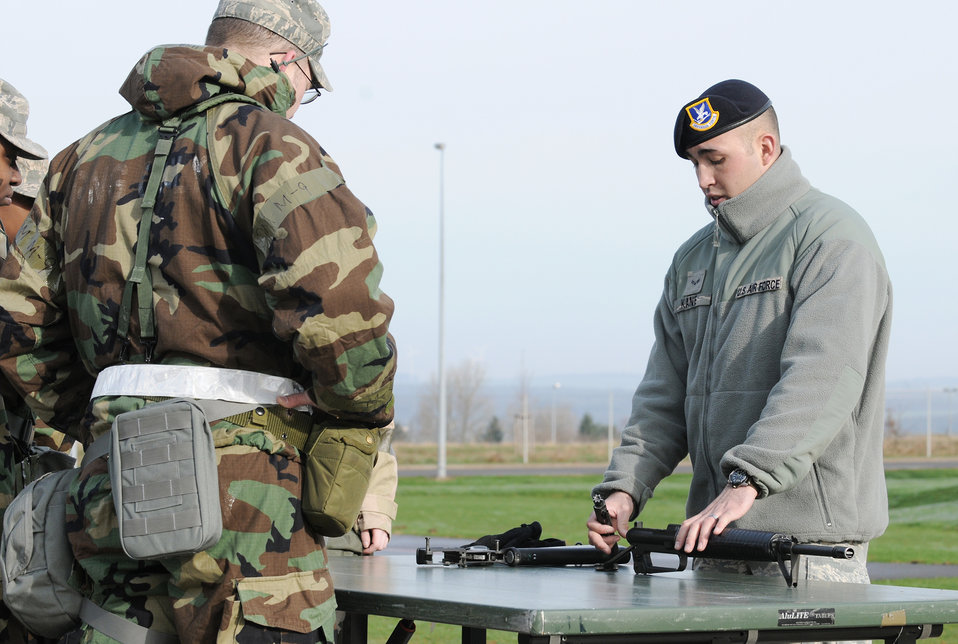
Spangdahlem Airmen train for evaluation

Airman 1st Class Charles Kane demonstrates the assembly of an M-16A2 rifle during individual core competency skills training April 2, 2010 at Spangdahlem Air Base, Germany. The training reviewed weapon proficiency and other skills to prepare active participants in the NATO Force Evaluation this summer. Airman Kane is a patrolman with the52nd Security Forces Squadron,